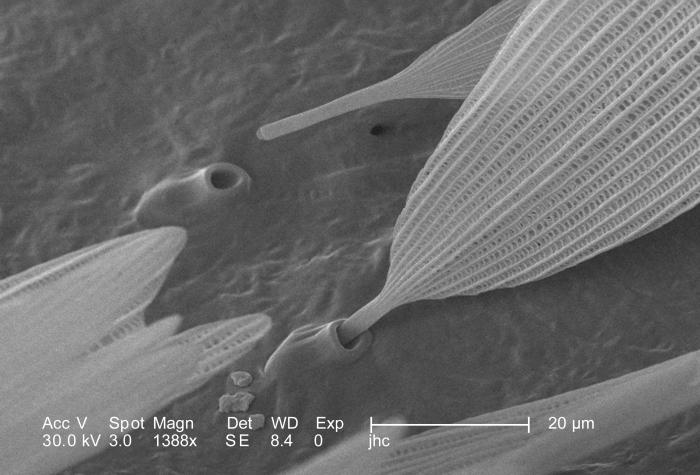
Under this relatively highly magnified scanning electron micrographic (SEM) view, some of the wondrous ultrastructural shapes found on the surface of an unidentified white moth were revealed. This moth, discovered deceased in the Decatur, Georgia suburbs, was a member of the Phylum Arthropoda, Order Lepidoptera.At this level of magnification, 1388X, the proximal strut of one single scale could be seen as it inserted into its exoskeletal pore, while another scale was entirely extracted from its insertion site. Imagery such as this brings to life, the incredible microscopic beauty, which goes unseen, but is abundant all around us. For another view of the scalar insertion site, at a much higher magnification, see PHIL 9841.